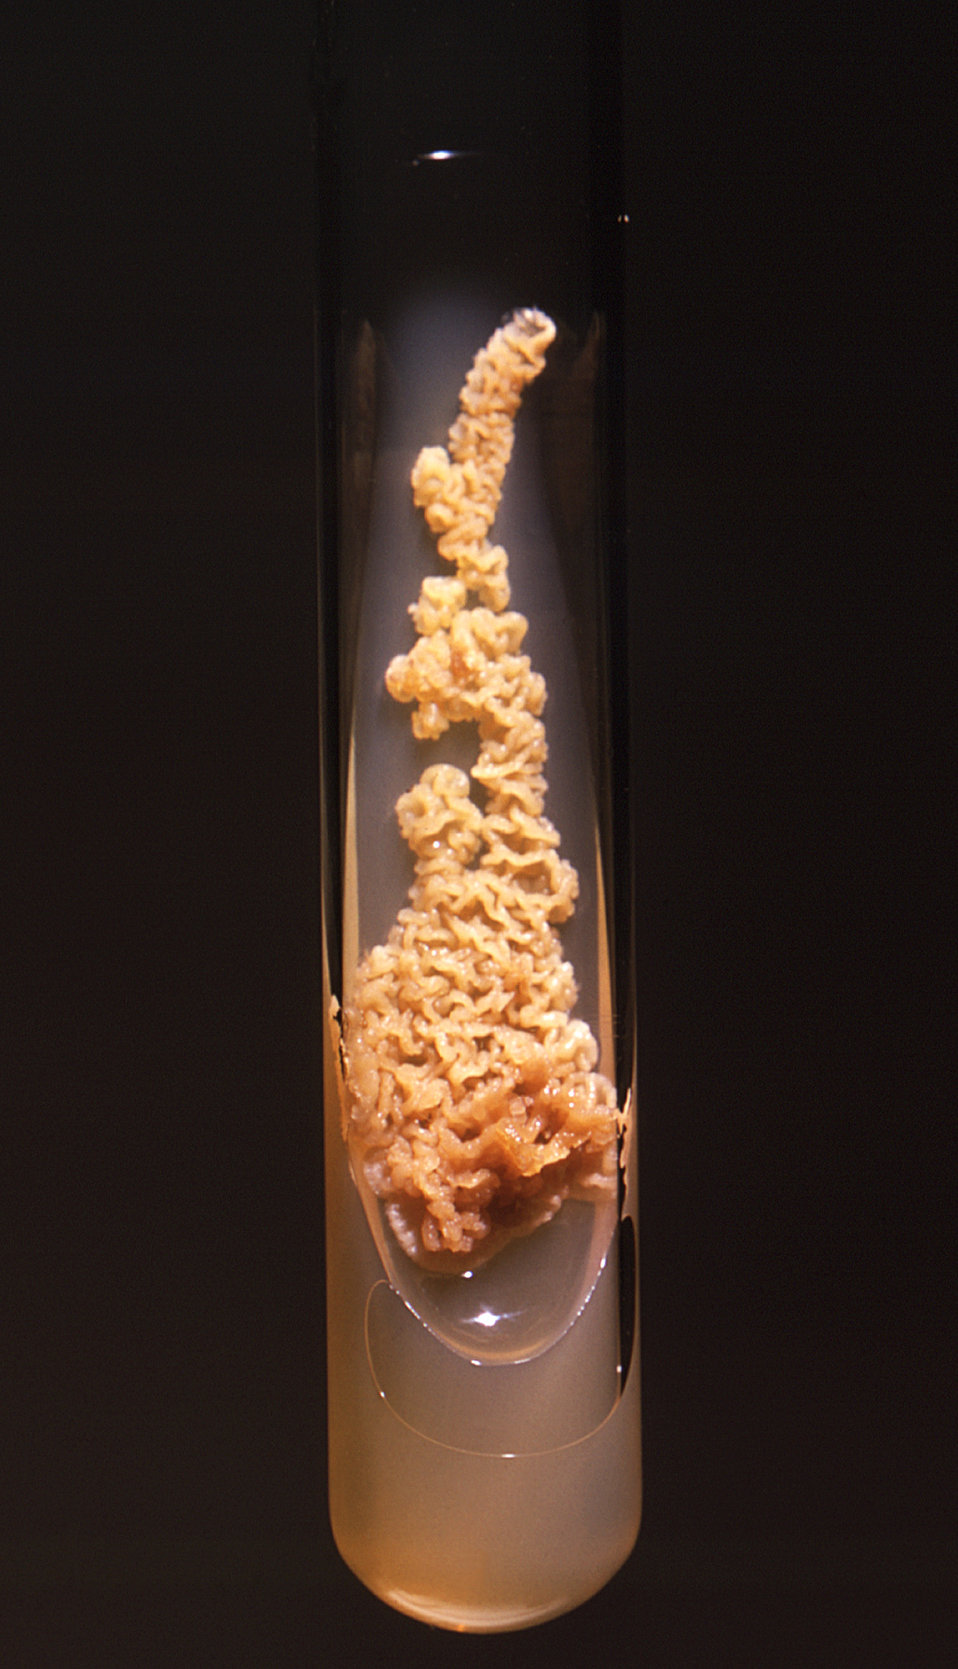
This 1971 image depicted a Sabourauds dextrose agar slant culture, which had cultivated a colony of Prototheca filamenta algal organisms. This alga lacks the presence of plastids, and is therefore, achlorophyllous.